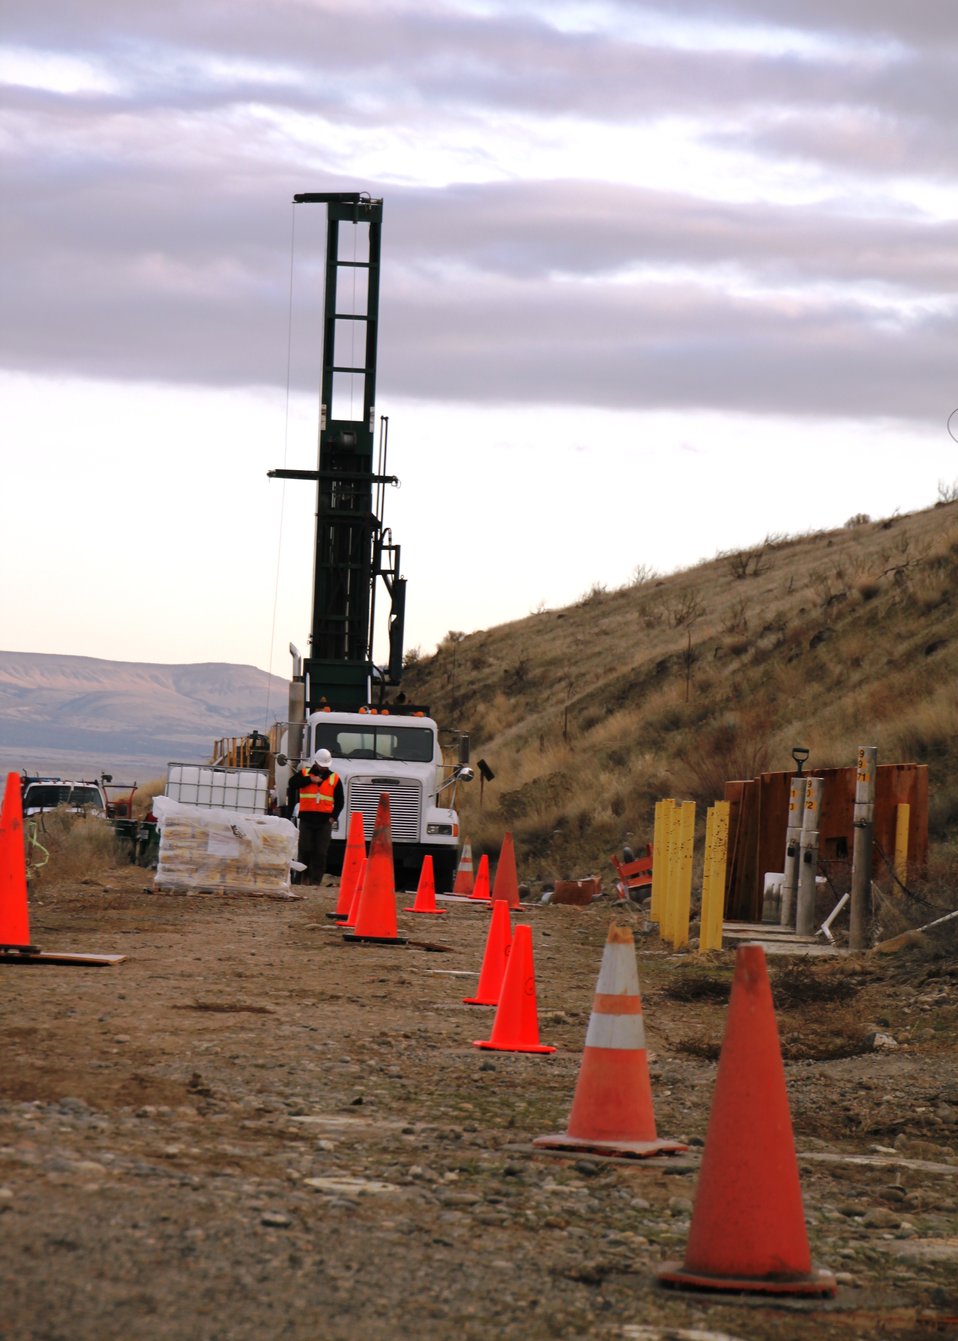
drill site

With $1.4 million in Recovery Act funding, CH2M HILL drilled 171 wells along the shoreline of the Columbia River, which runs through the Site. The new wells will help extend a chemical groundwater barrier in the soil by half a mile along the river to contain radioactive contamination in the groundwater (strontium-90).